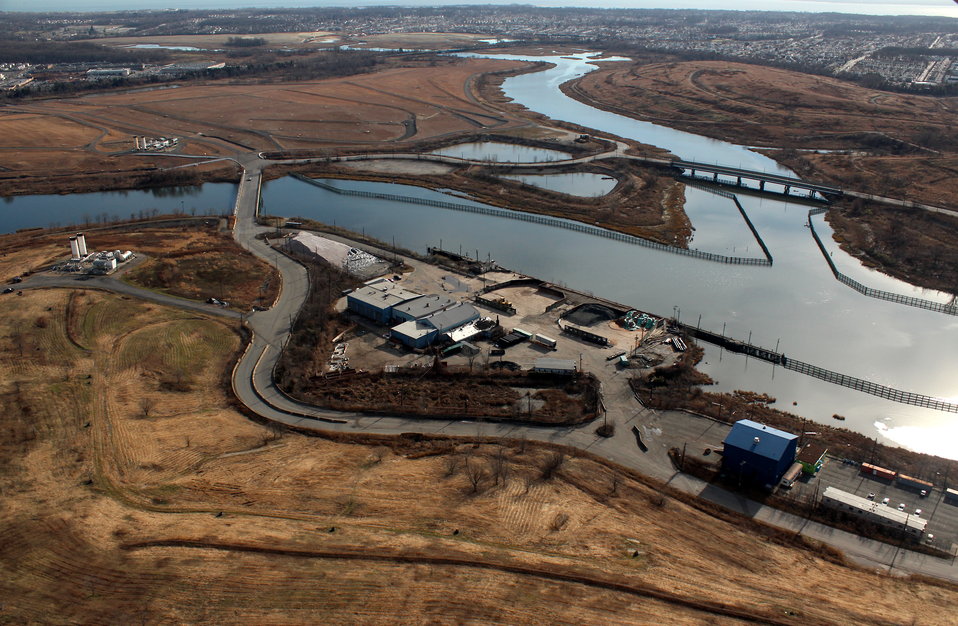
December 6, 2012 Fresh Kills Landfill Flyover, Staten Island, New York

Fresh Kills is no longer active as a landfill, but it was once the largest in the world. For the duration of the Hurricane Sandy response, EPA, in partnership with the City of New York, used the Fresh Kills Sanitation Plant as a staging area for household hazardous waste.

EPA collected and sorted items ranging from drums, tanks, paints, and aerosols for proper disposal off site. View previous photos of the sorting process here: www.flickr.com/photos/usepagov/8250066197/in/set-72157632...